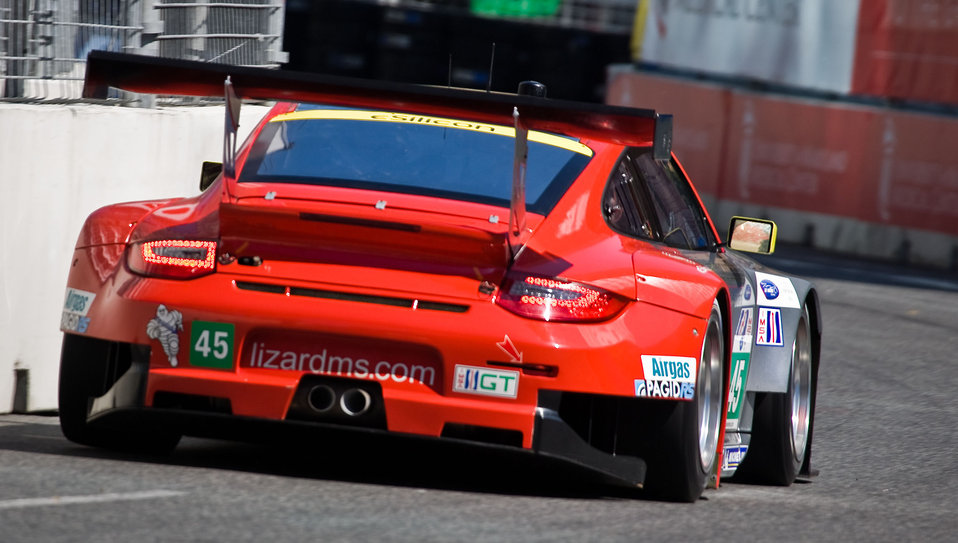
The Number 45, Porsche GT3 911 RSR of the Flying Lizard Motorsports Team uses E85 fuel for the American Le Mans Series (ALMS) motorsport series at the Baltimore Grand Prix, on Friday, August 31, 2012, Labor Day Weekend. ALMS says they are “the Global Leader in Green Racing by being the only racing series recognized to comply with the Green Racing protocols developed by the U.S. Department of Energy (DOE), the U.S. Environmental Protection Agency (EPA) and Society of American Engineers International (SAE).” Instead of high-octane gasoline all the cars in the series use one of 5 different forms of energy (system). Clean diesel, E85, E10, isobutanol or hybrid energy technology. The specific hybrid system, used by the Porsche GT3 cars, are a (battery-less) flywheel-based Kinetic Energy Recovery Systems. These organizations are accelerating technology development at speeds up to 200 mph, in 650-700 horsepower race cars that are based on two groups of cars; the purpose built prototype race cars and the GT
(Grand Touring) cars based on production sports cars that you can see in showrooms. From these groups, there are five classes of cars, all of which race at the same time during the race events.
The U.S. Department of Agriculture (USDA) focuses on renewable fuel sources that are profitable and sustainable. 2011 accomplishments include research and planning for renewable energy and investments in renewable energy production.
- Completed a Biofuels Roadmap proposing a plan of action to meet congressionally mandated RFS2 goals for national biofuels production.
-Coordinated five regional research centers to work on the science necessary to ensure profitable biofuels can be produced from a diverse range of feed stocks across the nation, not just in the Midwest where the industry is already thriving.
-Over three years, USDA invested about $320 million to accelerate research on renewable energy ranging from genomic research on bioenergy feedstock crops, to development of biofuel conversion processes and costs/benefit estimates of renewable energy production.
- More than 130 biodiesel and ethanol projects funded by USDA are currently producing almost 3.7 billion gallons of biodiesel and ethanol annually, enough fuel – in equivalence to gasoline – to keep five million vehicles on the road every year.
-We are supporting efforts to build five biorefineries to produce advanced biofuels in states from Florida and Michigan to New Mexico, with investments worth about $310 million. We are supporting facility upgrades and feasibility studies for advanced biofuels projects in every region of the country.